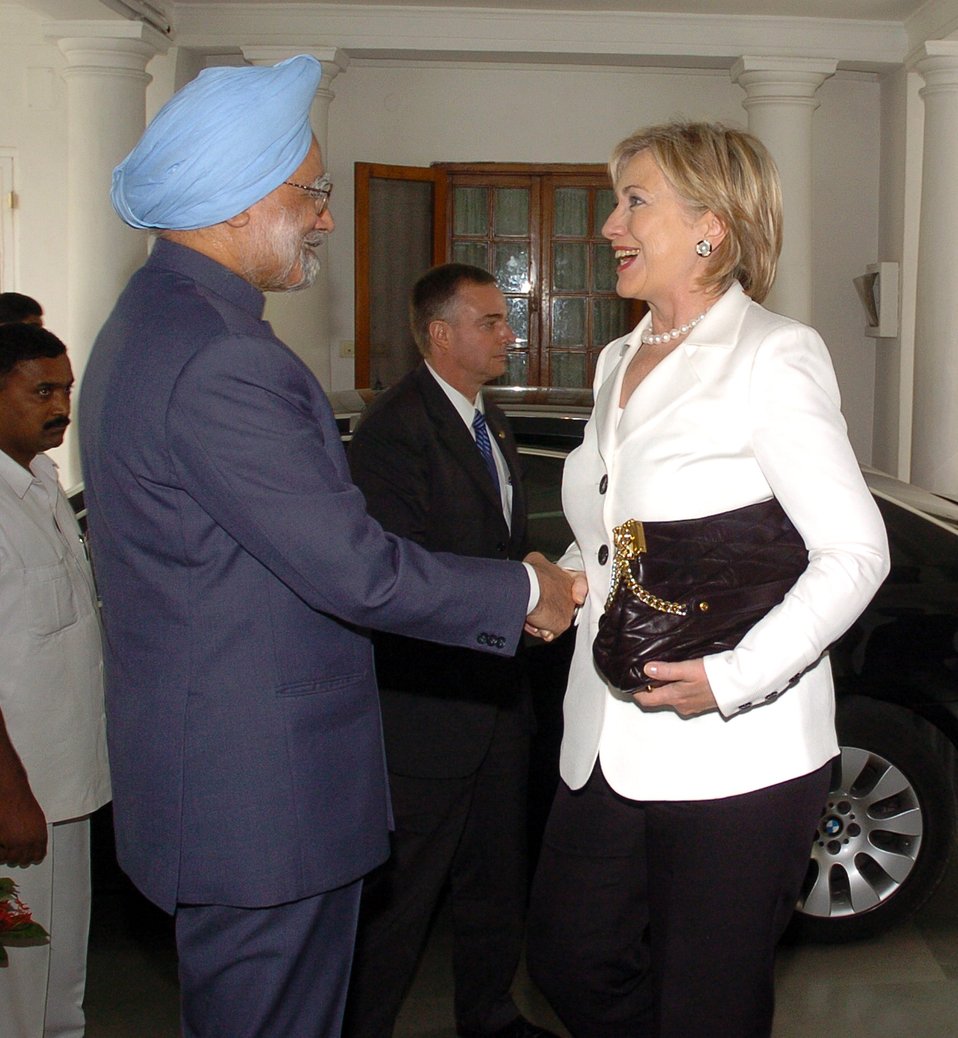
Secretary Clinton Visits Indian Prime Minister

Prime Minister Manmohan Singh greets U.S. Secretary of State Hillary Rodham Clinton upon her arrival at his residence in New Delhi, India July 20, 2009.